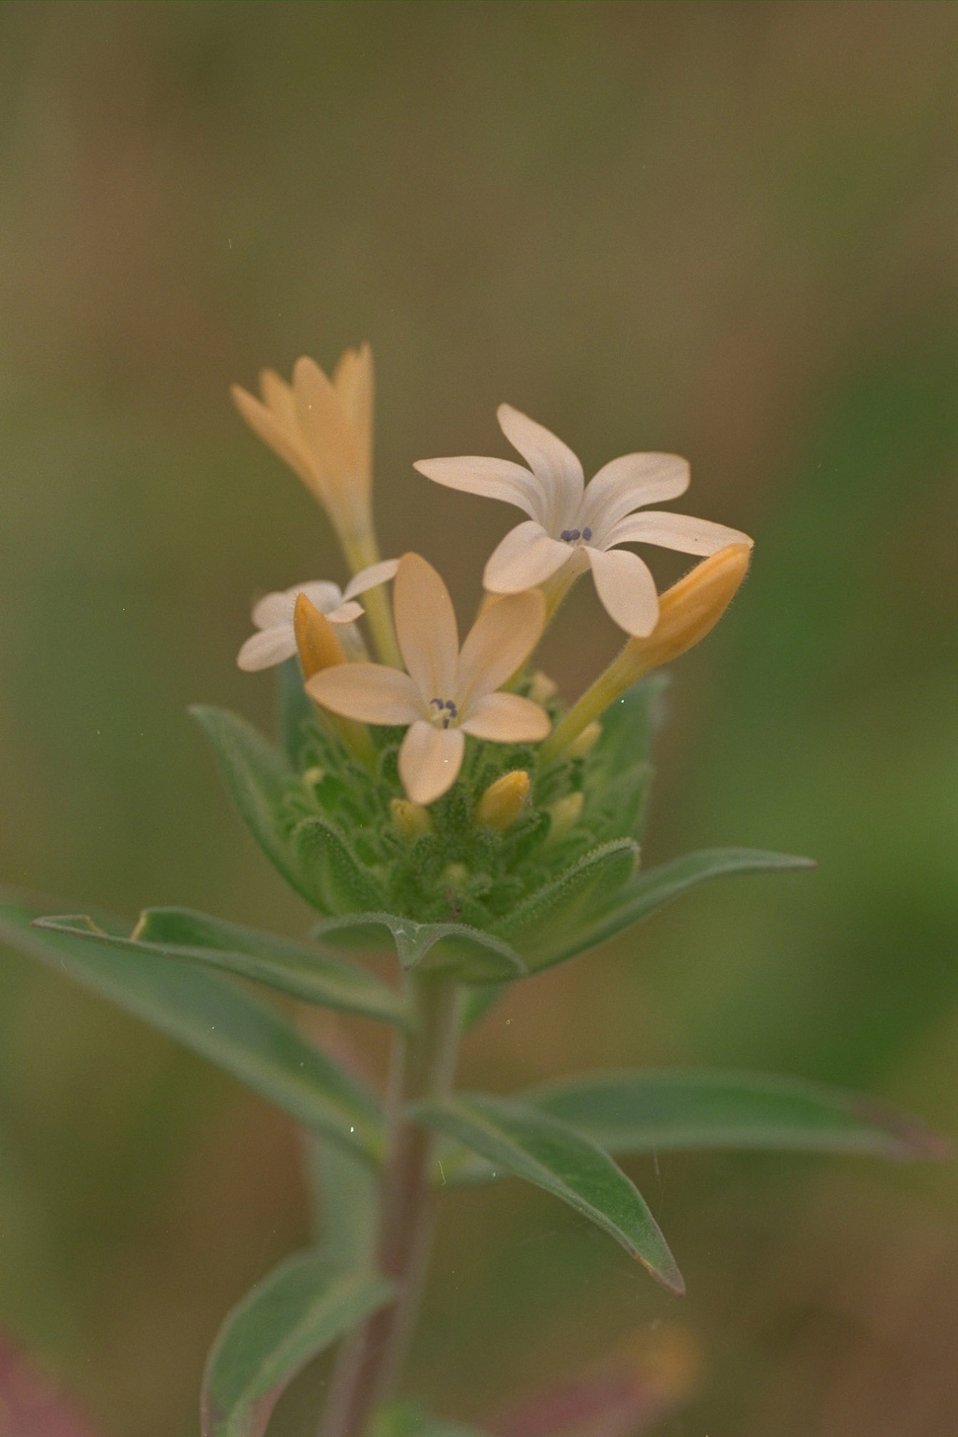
Grand Collomia (Collomia grandiflora) at Upper Table Rock.